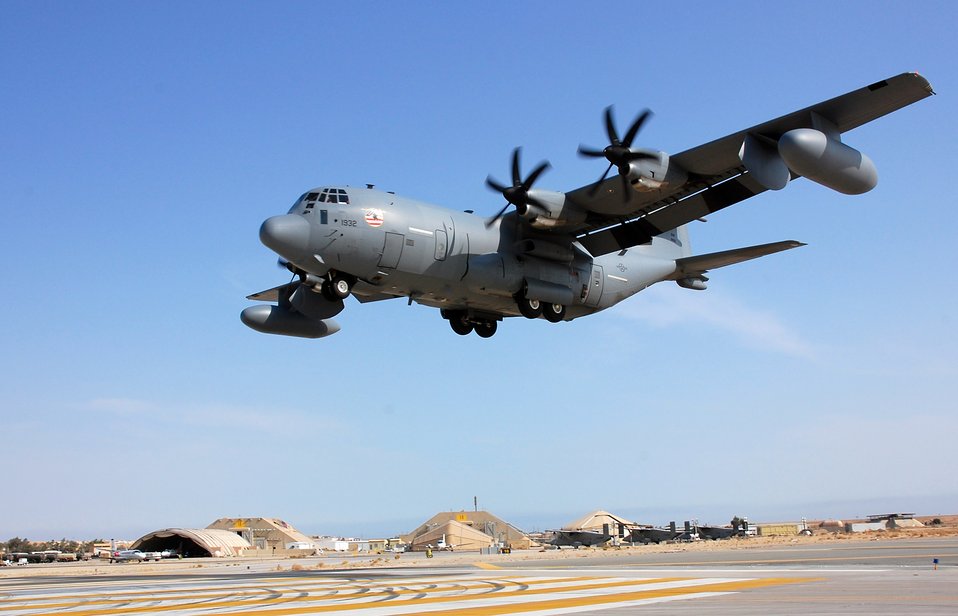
Commando Solo: Impacting the hearts and minds

An EC-130J Commando Solo aircraft prepares to land at an air base in Southwest Asia. The EC-130J conducts information operations, psychological operations and civil affairs broadcasts in the AM, FM, HF, TV and military communications bands.